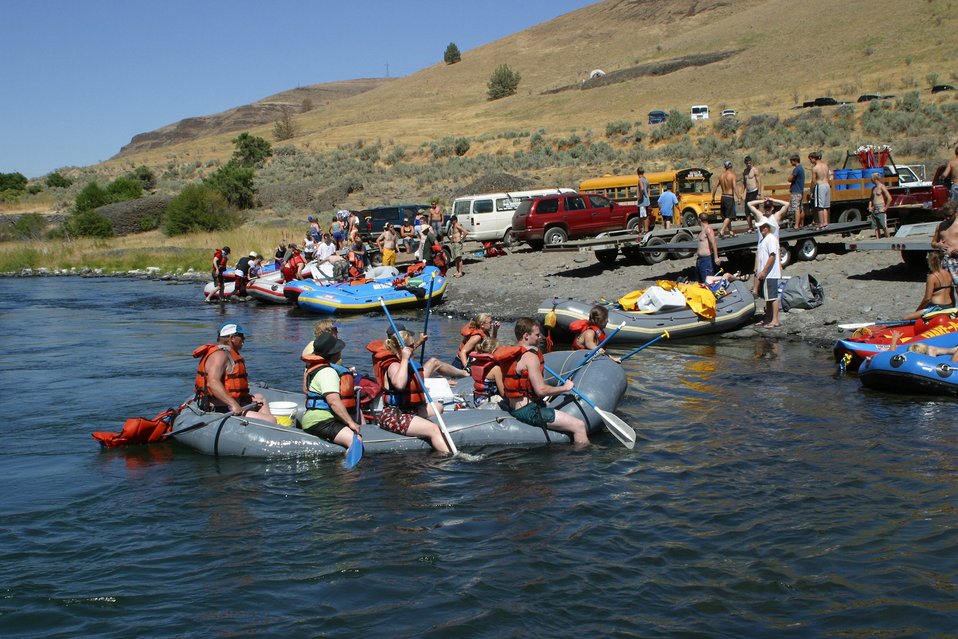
Sandy Beach is the last take out before Sherars Falls. All watercraft must exit the river!